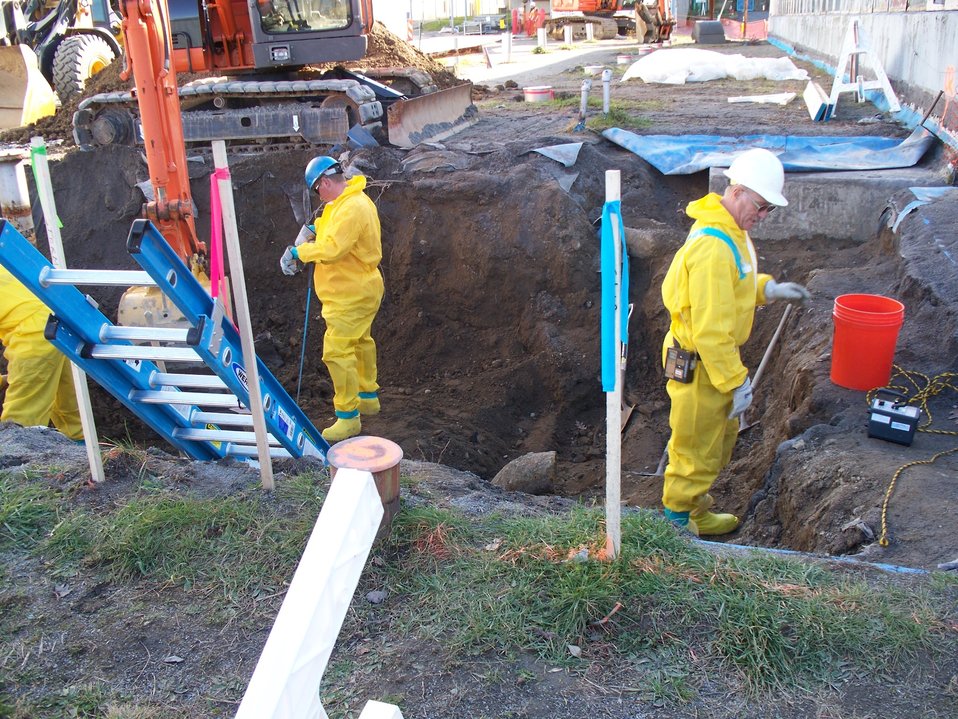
SPRU WGI tank vault excavation

Significant progress is being made in the decontamination and demolition (D&D) of two contaminated buildings at the Separations Process Research unit (SPRU). The two buildings, designated G2 and H2, are contaminated with radioactivity and have large quantities of hazardous materials such as asbestos. They are located at the Knolls Atomic Power Laboratory (KAPL) near Schenectady, New York, which is a Department of Energy – Naval Reactors site. The work is being performed by Washington Group International (WGI). About 50% WGI’s work at SPRU is funded by the American Recovery and Reinvestment Act.